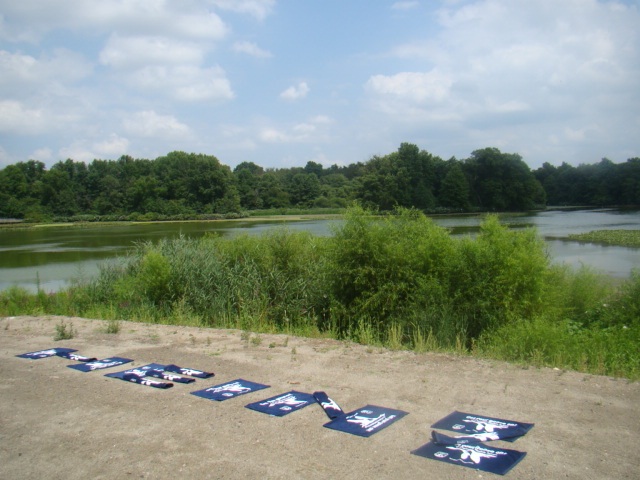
Get Your Goose On!

GYGO! at John Heinz NWR.